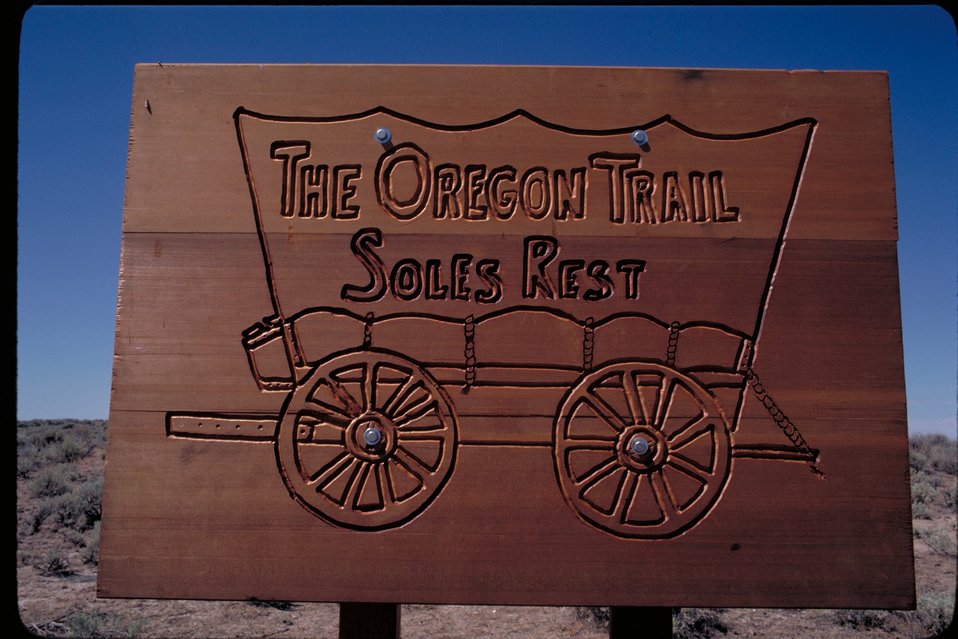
Oregon Trail sign Lower Snake River District